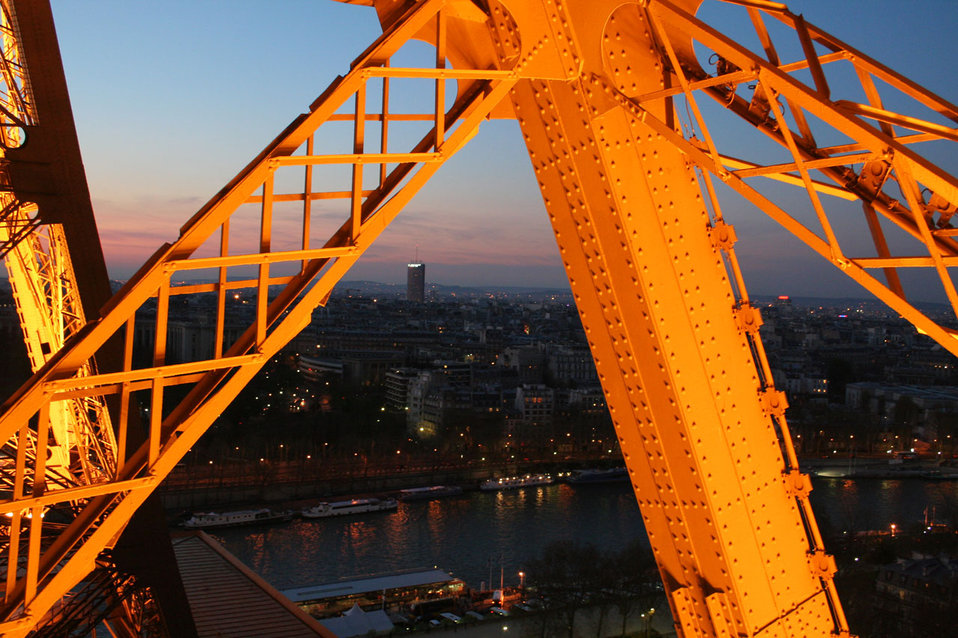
Paris from eiffel tower

Paris seen from the eiffel tower.